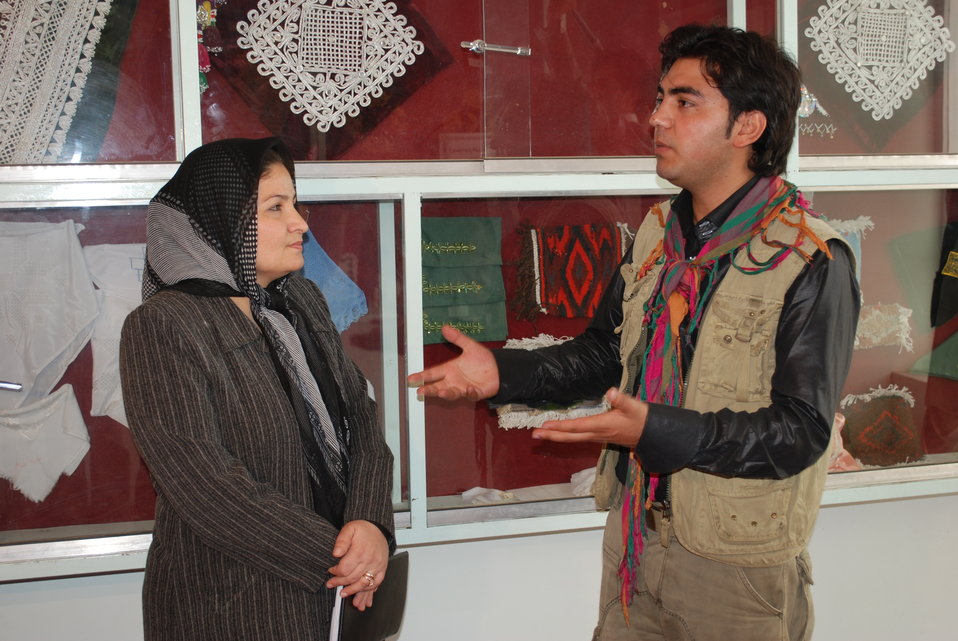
'On the Road' in Balkh Province